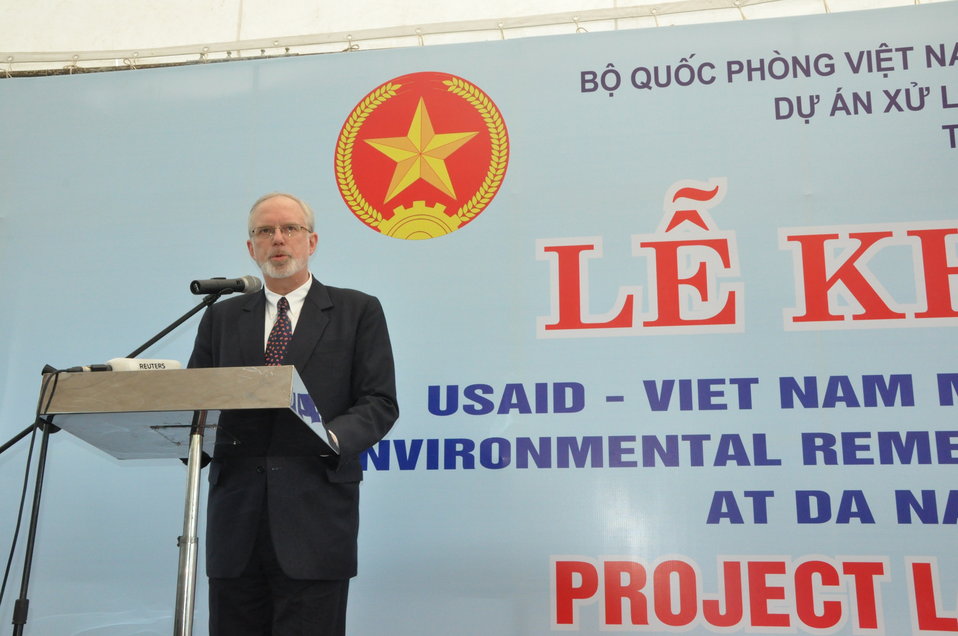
U.S. Ambassador David B. Shear speaks at the Environmental Remediation of Dioxin Contamination at Danang Airport Project Launch

Danang, August 9, 2012